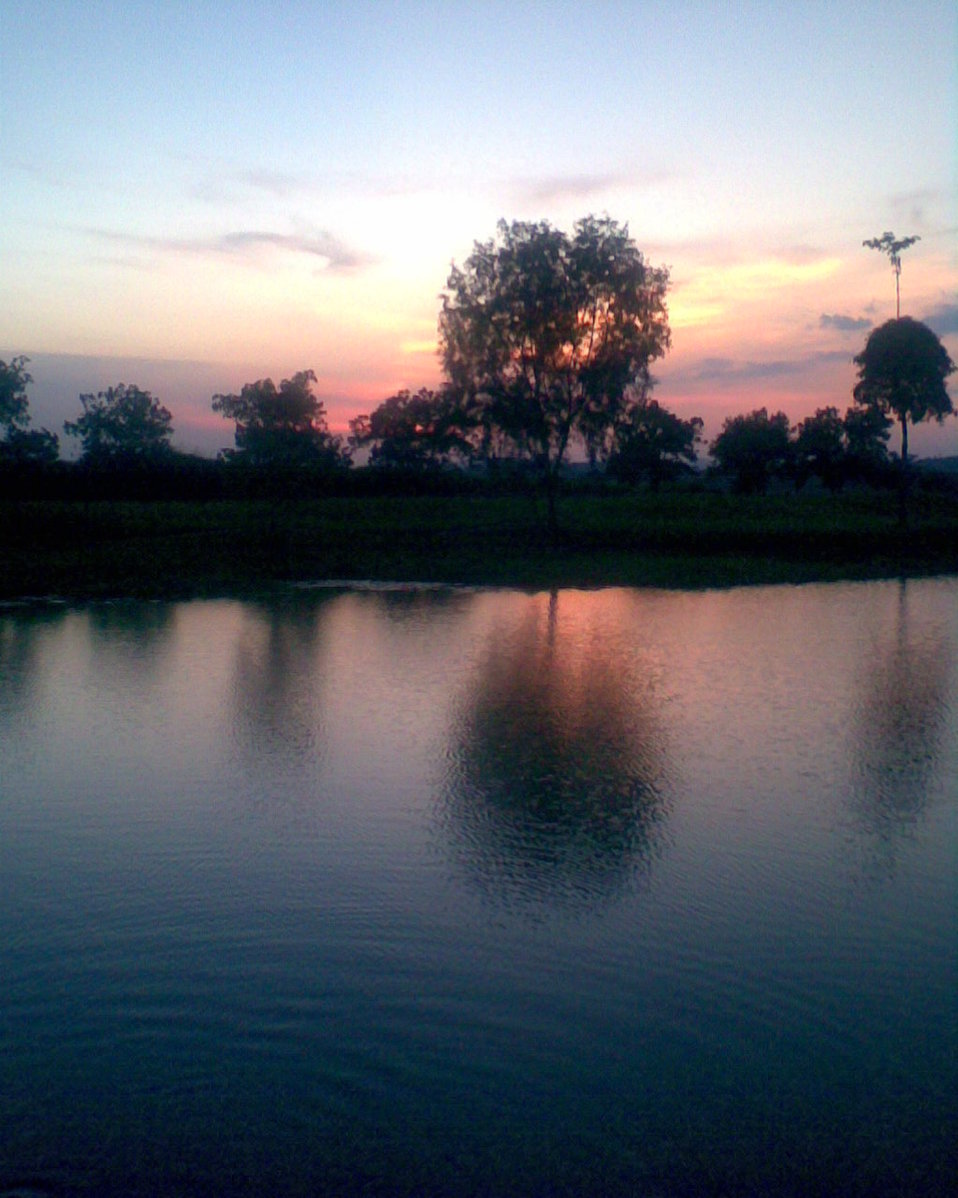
Lake in Seremban 3